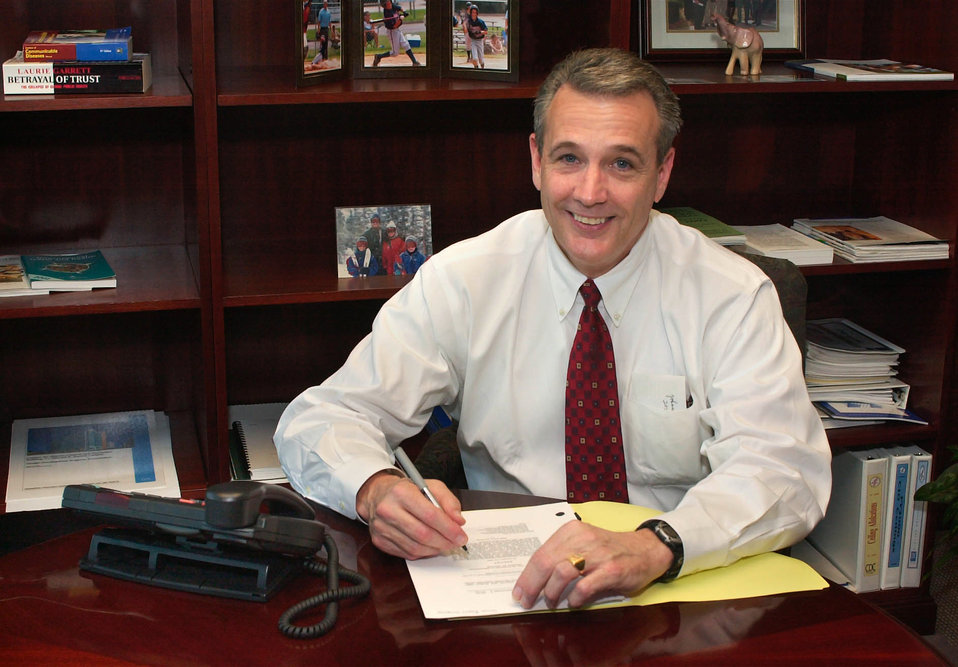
This 2003 photograph showed the Centers for Disease Control and Prevention's Chief Operating Officer, William H. Gimson, III, M.B.A., at his desk in Atlanta, Georgia.